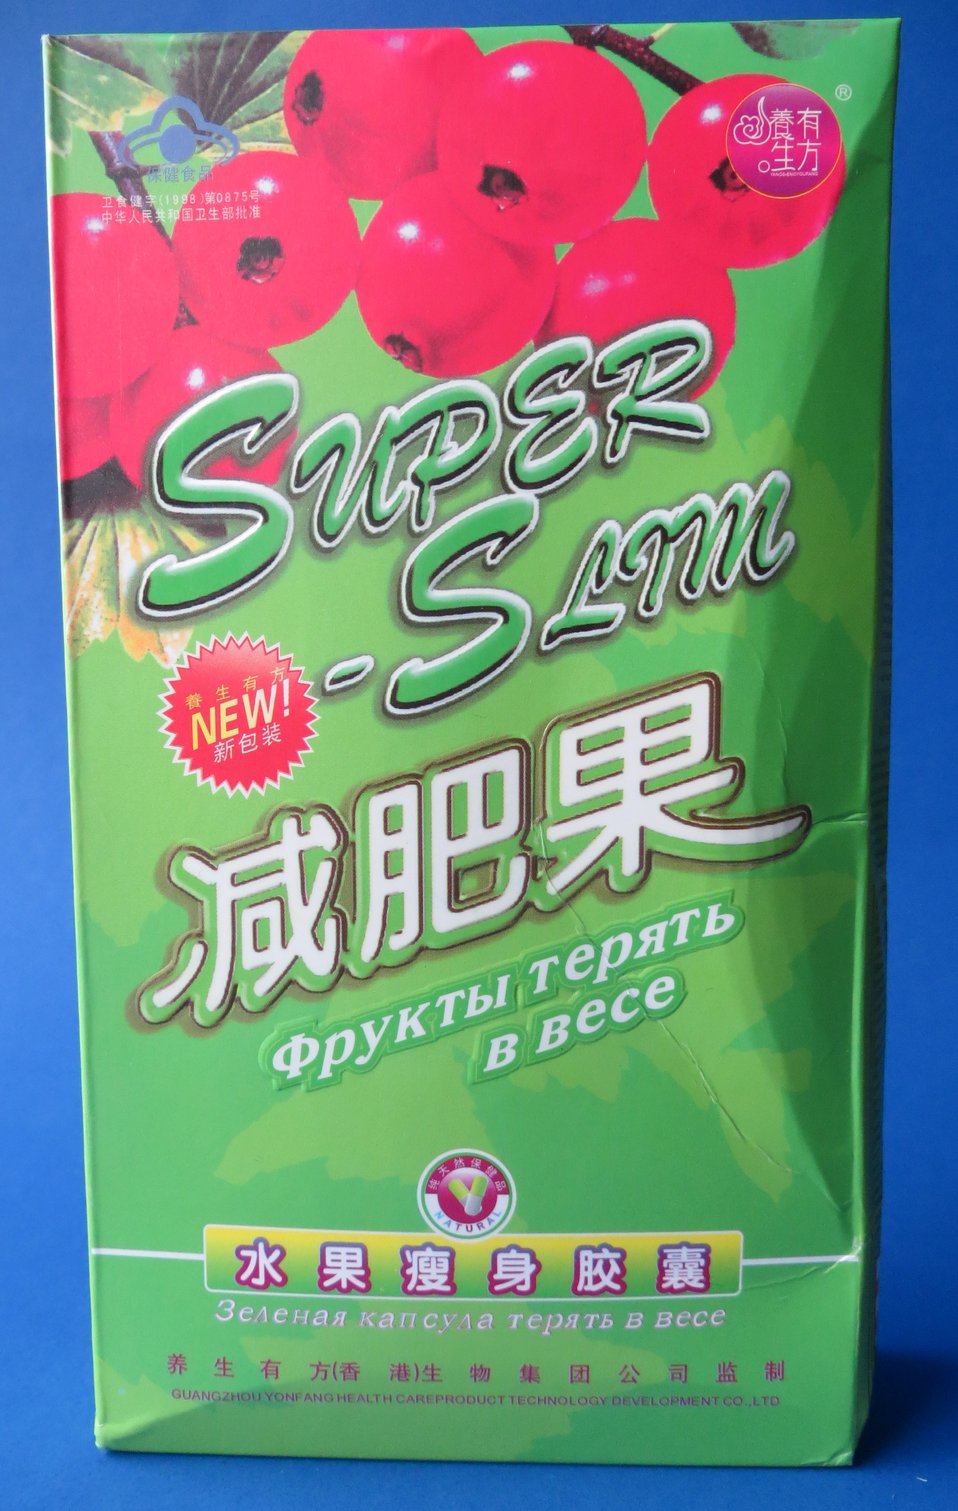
Super Slim

November 21, 2013 - The FDA is advising consumers not to purchase or use 'Super Slim,' a product promoted and sold for weight loss. The product was found to contain undeclared sibutramine and phenolphthalein. For more information, go to www.fda.gov/Drugs/ResourcesForYou/Consumers/BuyingUsingMe...

And read this Consumer Update: Beware of Fraudulent ‘Dietary Supplements’